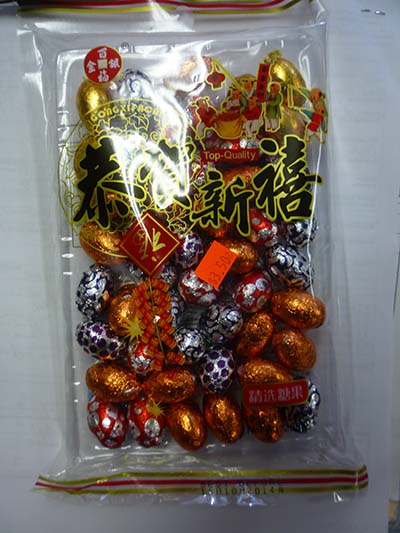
RECALLED – Gong xifacai gift chocolates

June 17, 2014 – Product Recall – Domega NY International Co Ltd Issues Allergy Alert On Undeclared Peanuts And Milk In Gong Xifacai Gift Chocolates.